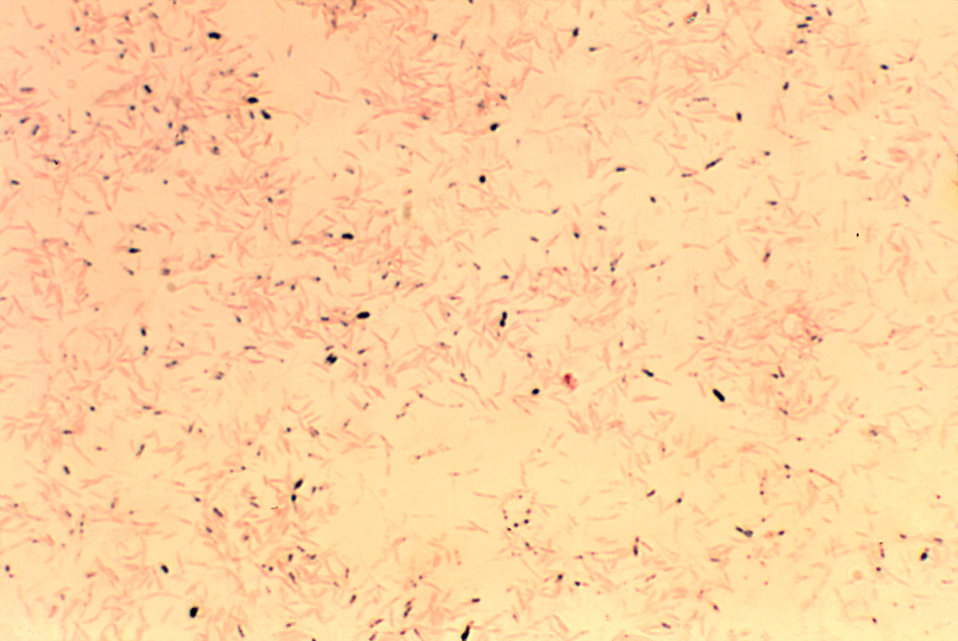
This photomicrograph depicted numbers of Legionella sp. organisms in a pure culture, which had been grown on a medium of Mueller-Hinton agar that had been supplemented with 1% Isovitalex, and 1% hemoglobin. Prior to microscopic analysis, the specimen had been stained with Sudan black B fat stain, which if present, will stain vacuoles inside these organisms containing long chain fatty acids, black.